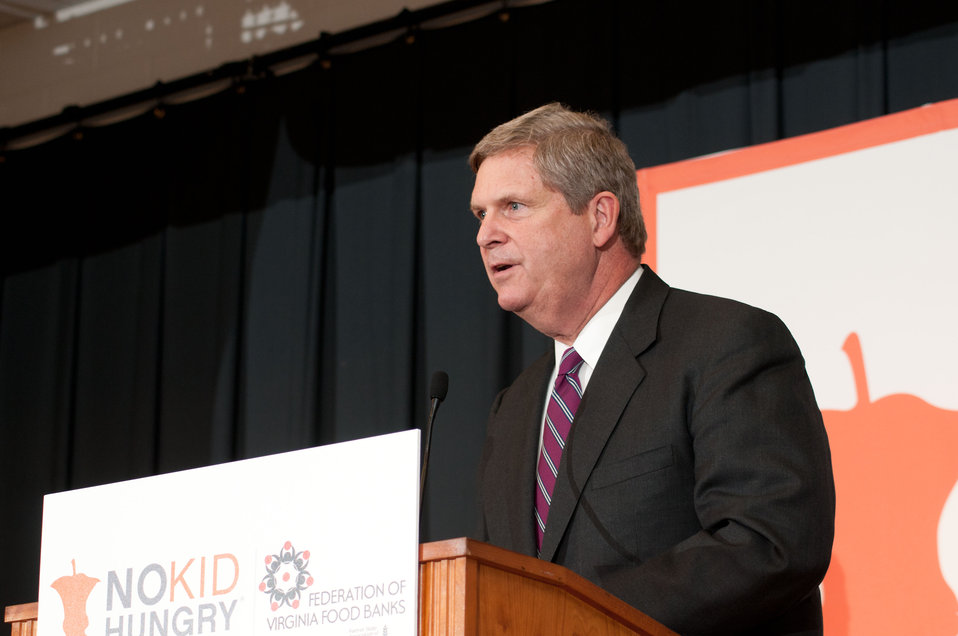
U.S. Department of Agriculture Secretary Tom Vilsack, helped launch the Virginia No Kid Hungry Campaign at Barcroft Elementary School in Arlington, VA, on Tuesday, June 7, 2011. Vilsack said, “ We know our strength comes from out partnerships…” Campaign partners include Share our Strength, the Federation of Virginia Food Banks, corporate partners, education leaders, government agencies and community organizations. The Virginia Summer Meals for Kids Program is funded by the USDA and provides free summer meals at hundreds of sites across the Commonwealth of Virginia, but according to a new report released today by the Food Research and Action Center, more than 80 percent of those eligible do not participate. Governor McDonnell announced and stressed that all parents who want free meals for their kids in need, can simply call 211 to find a summer meals site near them.